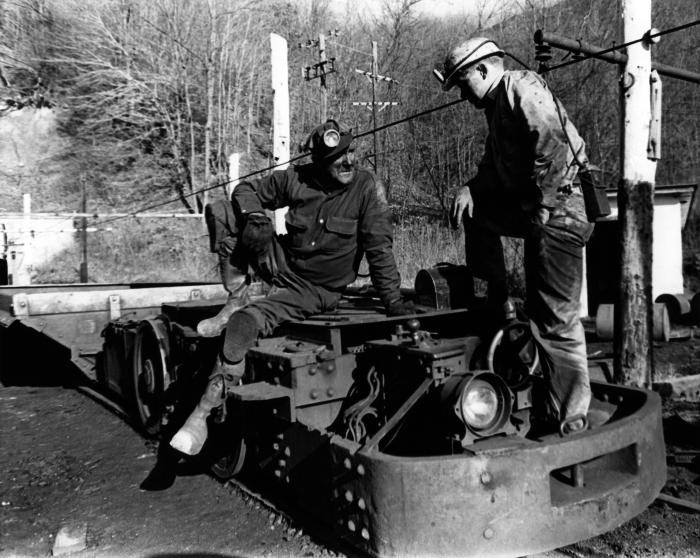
Still wearing their headlamps outside the confines of a coal mine, these two men were seated on a rail pull-car used to pull a string of coal bins, which would carry raw ore up, and out of the subterranean mine shafts. One of the men appears to be an industrial hygienist, for he was carrying what appeared to be an air-quality measuring device. The seated miner was wearing protective knee pads, which he'd need when maneauvering around in a crouched position in the small spaces inside the mine shaft. Looking at the coal dust pattern on the seated miner's face, it appeared that he hadn't been wearing a protective breathing mask. Due to the inescapable presence of airborne coal dust in the small confines of a mine, miners are predisposed to the long-term negative health effects of this profession such as 'black lung disease', or 'coal-workers' pneumoconiosis' (CWP). See PHIL 9551 for another view of these men.